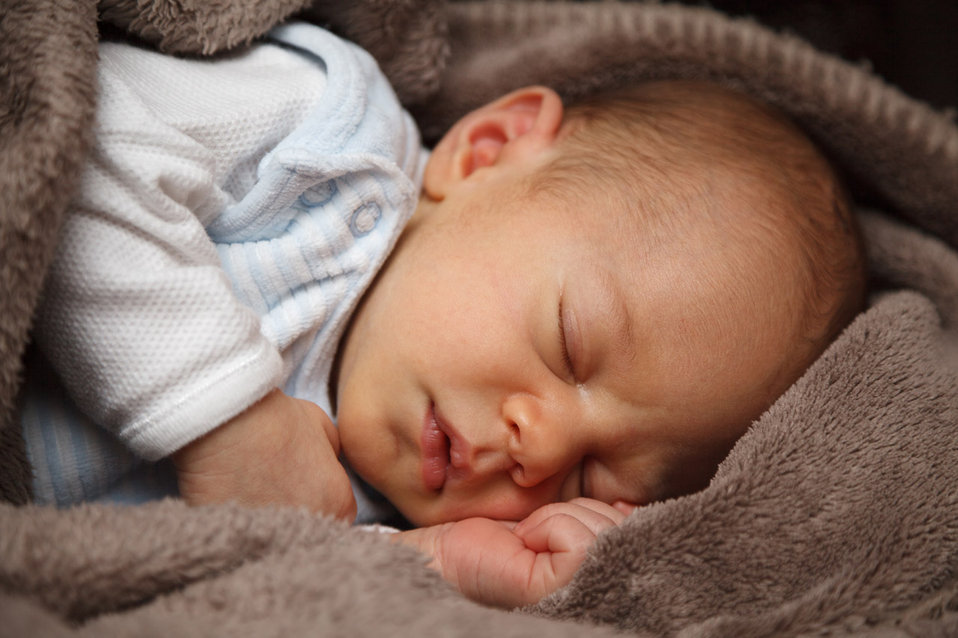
Newborn sleeping

Young baby sleeping.